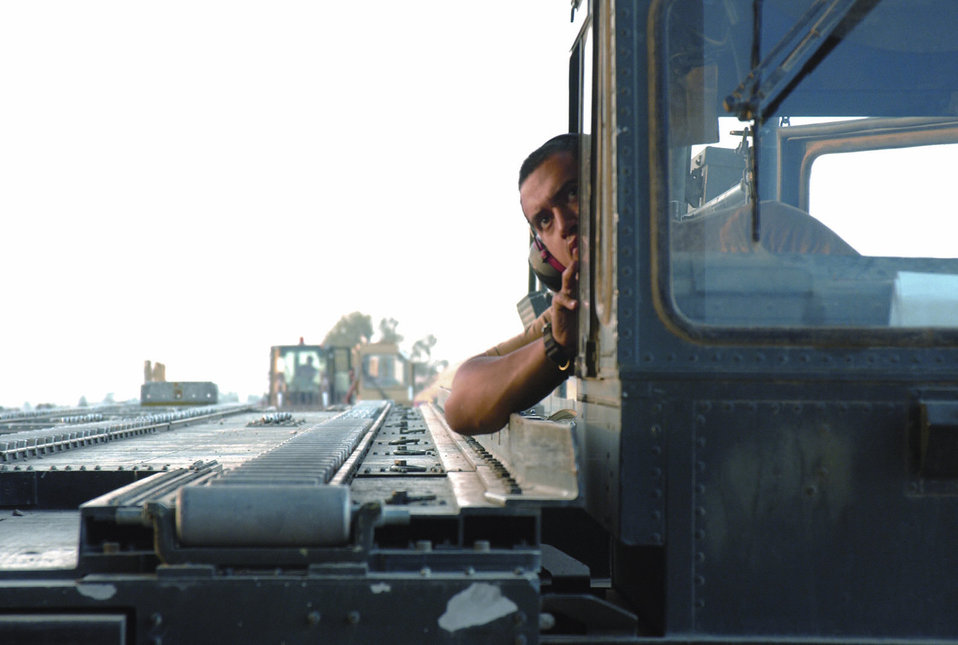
Aerial porters firing on all cylinders in Iraq

BALAD AIR BASE, Iraq -- Senior Airman Roberto Vasquez maneuvers a 60K loader to the rear of a C-17 Globemaster III to unload cargo here. Airman Vasquez is assigned to the 332nd Expeditionary Logistics Readiness Squadron.